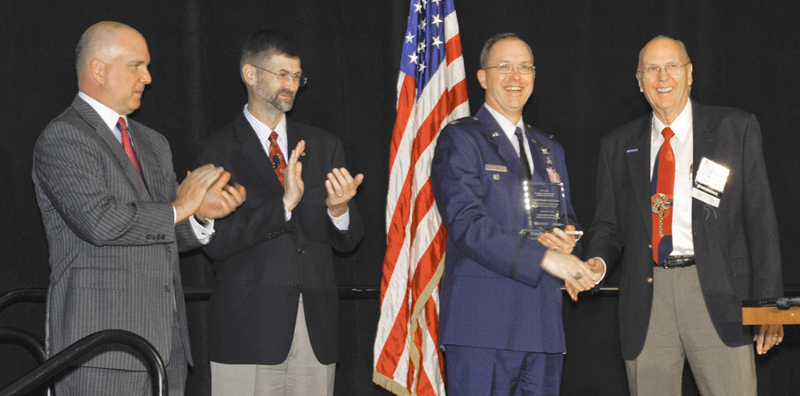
Air Force architects receive leadership excellence award

Representing the Air Force Enterprise Architecting Division, Col. David Geuting accepts an Excellence in Enterprise Architecture Award during the Enterprise Architecture 2010 Conference Sept. 8, 2010, in Washington D.C.